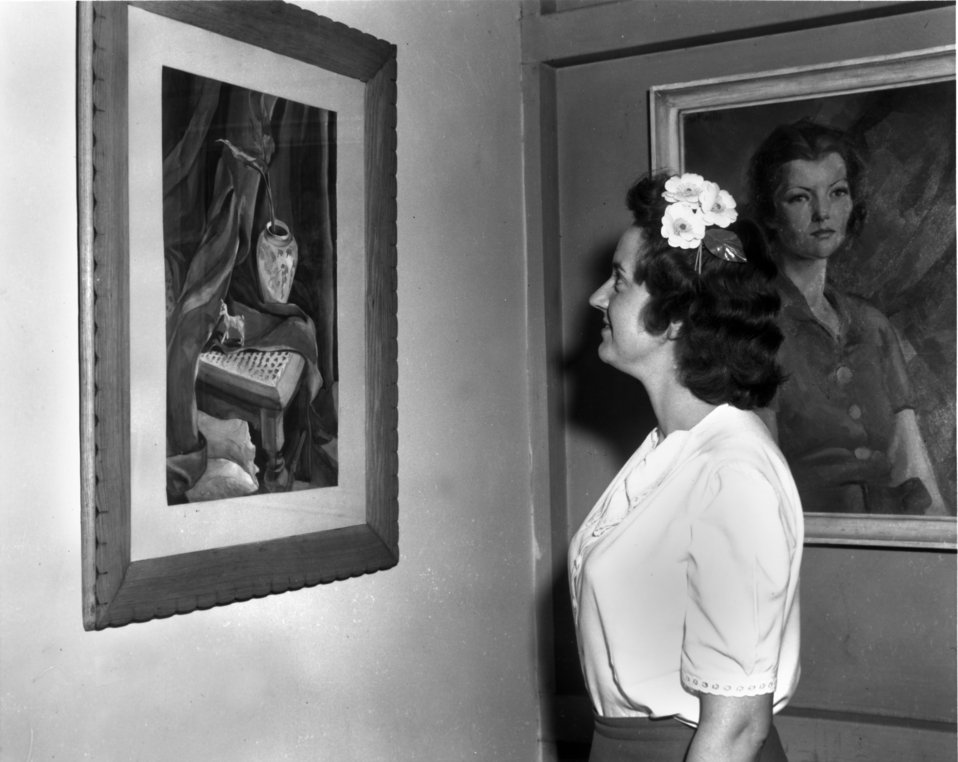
Art Exhibit at Public Library Oak Ridge Tennessee

Pro 611-2 DOE photo Ed Westcott 5-24-1945 Oak Ridge Tennessee